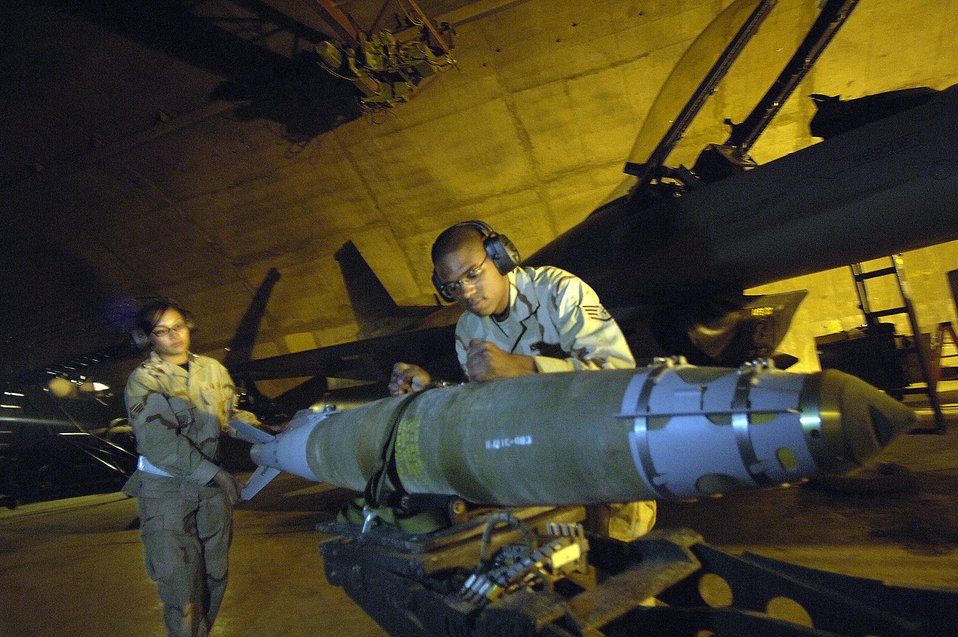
Arming the Falcons for fight

Staff Sgt. Christopher Curry and Senior Airman Roseanne Williams prepare to load munitions on an F-16 Fighting Falcon March 4 at Balad Air Base, Iraq. The Airmen are assigned to the 332nd Expeditionary Aircraft Maintenance Squadron.